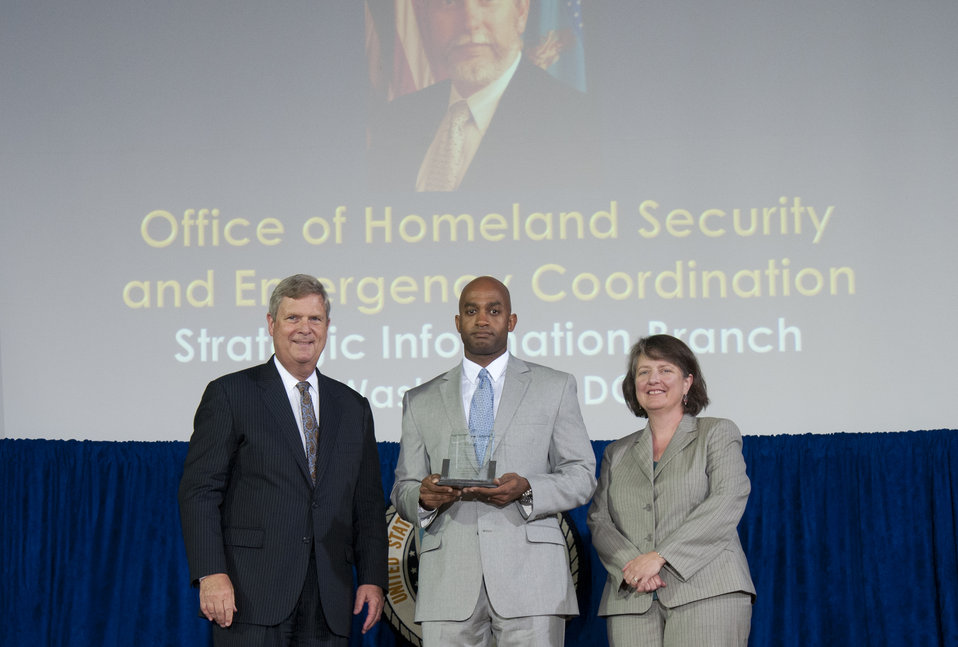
Agriculture Secretary Tom Vilsack and Agriculture Deputy Secretary Kathleen Merrigan present the Secretary’s Honor Award to Strategic Information Branch Office of Homeland Security and Emergency Coordination team member Samuel Baker at the U.S. Department of Agriculture (USDA) 64th Annual Honor Awards Ceremony in Washington, D.C. on Wednesday, Sept. 12, 2012. The Strategic Information Branch provided innovative implementation of a new USDA strategic information operation efficiently and effectively delivering real time data in support of critical USDA priorities.